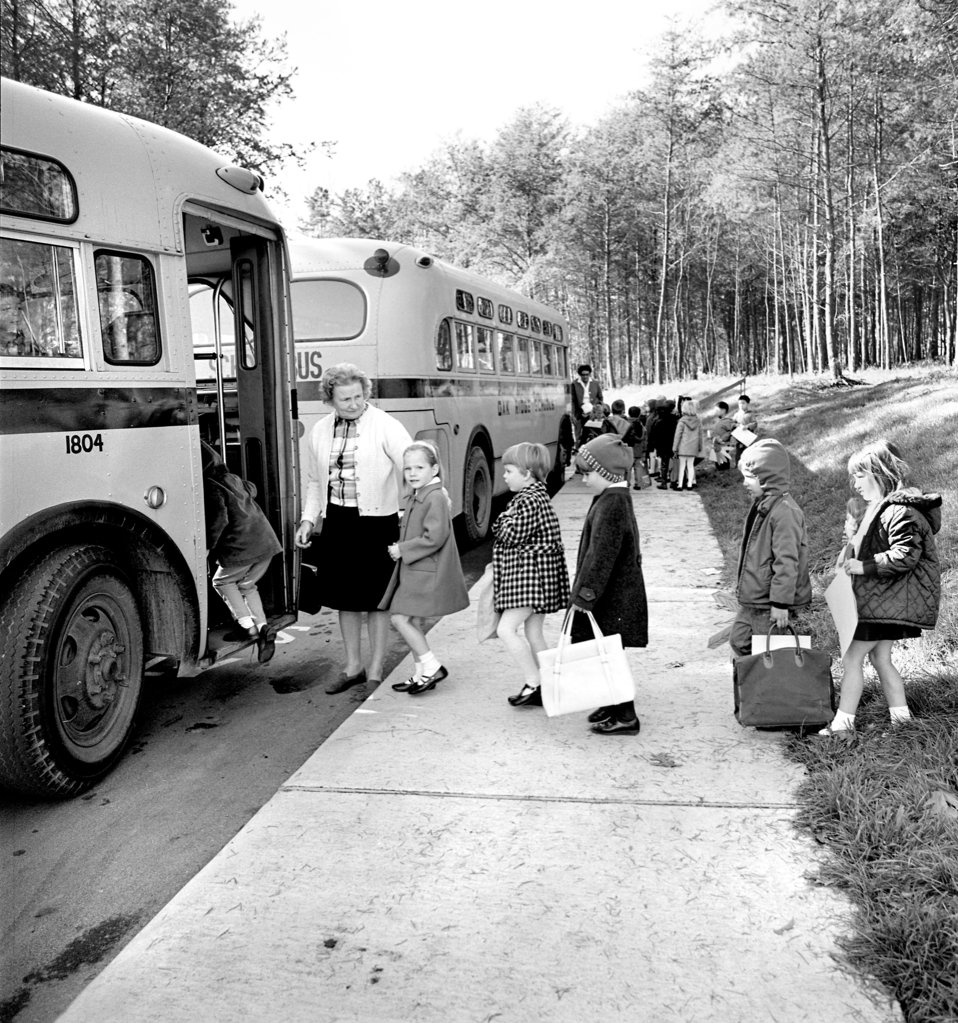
Children loading on Oak Ridge School Bus 1968

68-589a DOE photo Frank Hoffman 11-1968 Oak Ridge Tennessee